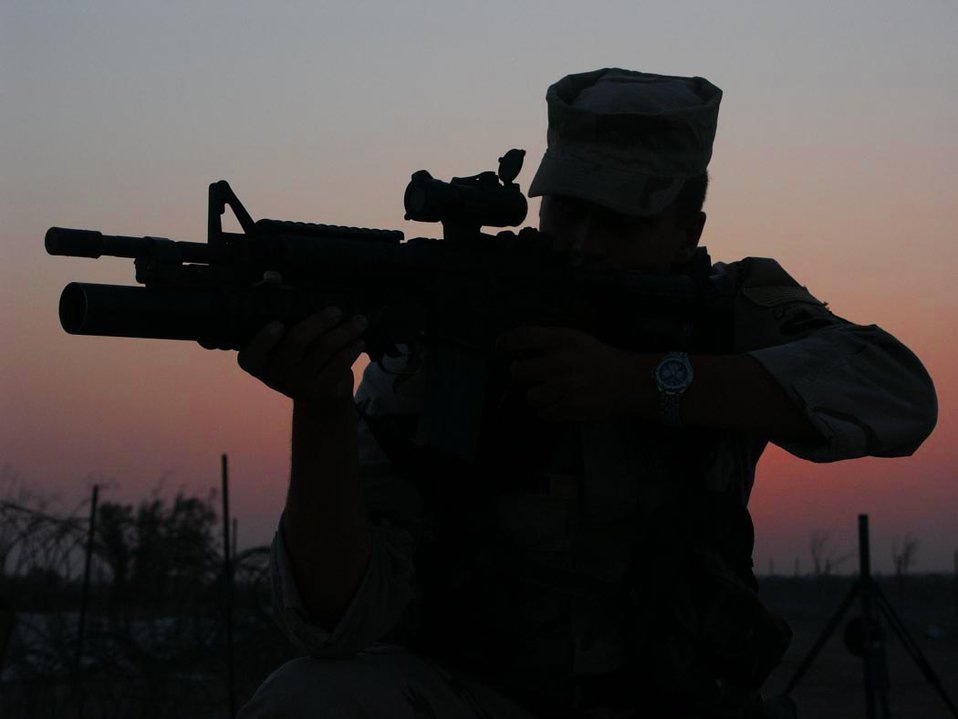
Shadow security

TALLIL AIR BASE, Iraq -- Staff Sgt. Eric Elyseev, 822nd Security Forces Squadron focuses in on a distant target while standing his post. Members of the 822nd SFS, supporting Operation Iraqi Freedom, are beginning to return home after serving more than five months here.